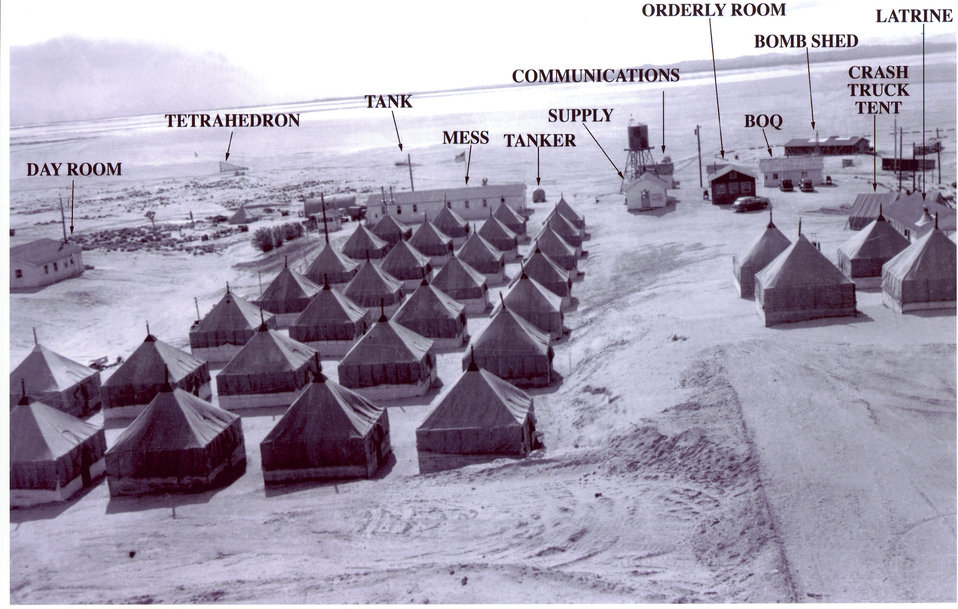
Encampment on Rogers Dry Lake

In the 1930s, Edwards Air Force Base, Calif., was the Muroc Bombing and Gunnery Range. Photographed is a tent camp on the edge of Rogers Dry Lake then.